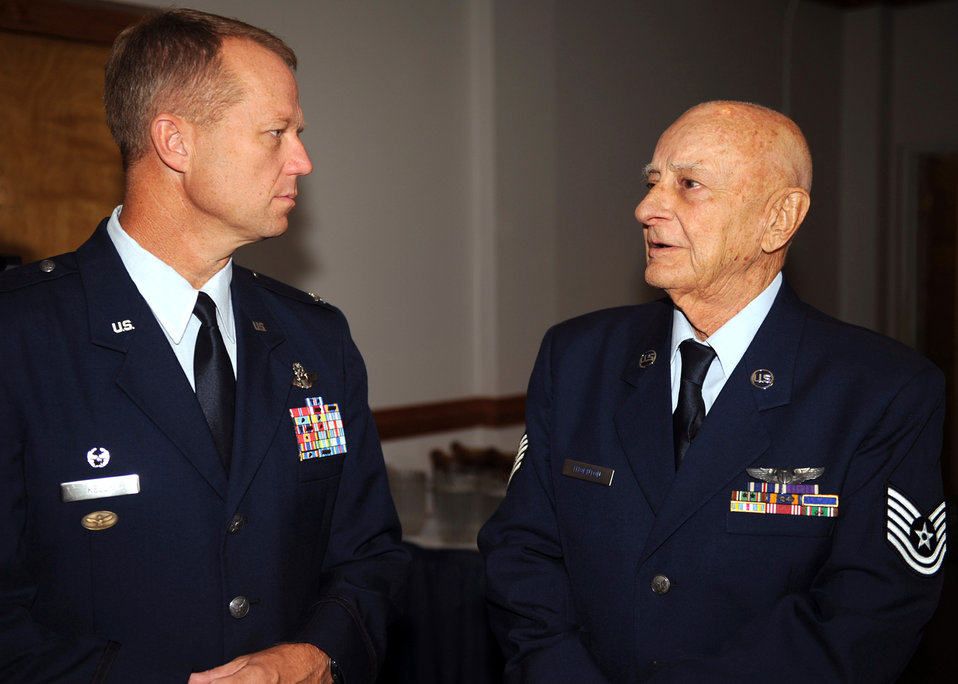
WWII vet receives long-awaited medals

Col. Mark Kelly speaks with World War II Tech. Sgt. Holt Thornton, before a medal presentation ceremony Aug. 29, 2009 at Seymour Johnson Air Force Base, N.C., Aug. 29. Mr. Thornton's granddaughter, Carrie Bass, researched her grandfather's service to ensure he received all of the medals he earned during his World War II service. Mr. Thornton joined the Army Air Corps at 17 years old and served in Africa, France, Italy and other various parts of Europe during from 1941 to 1944. Colonel Kelly is the 4th Fighter Wing commander.